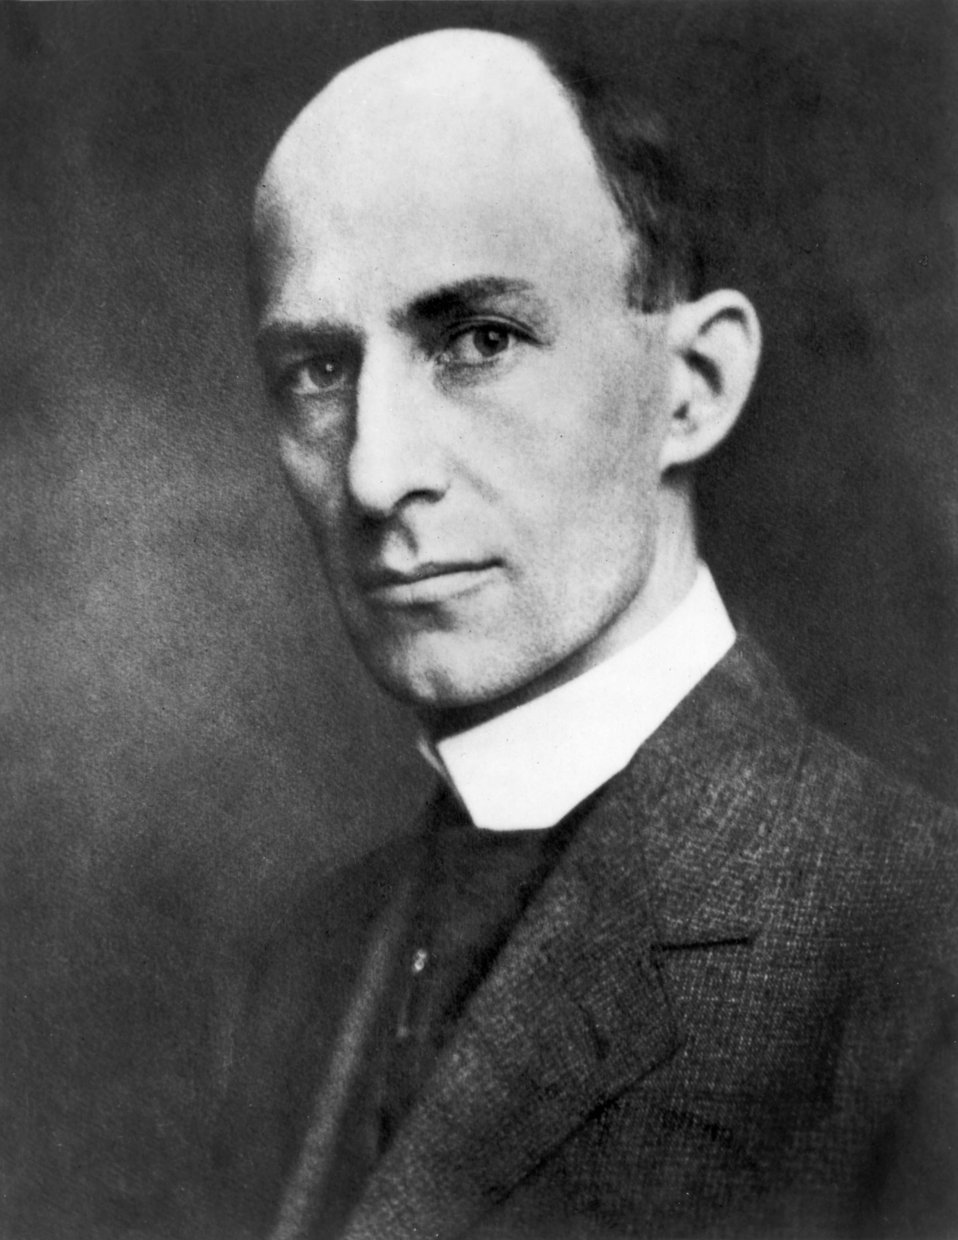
Wilbur Wright

EARLY YEARS -- Wilbur Wright